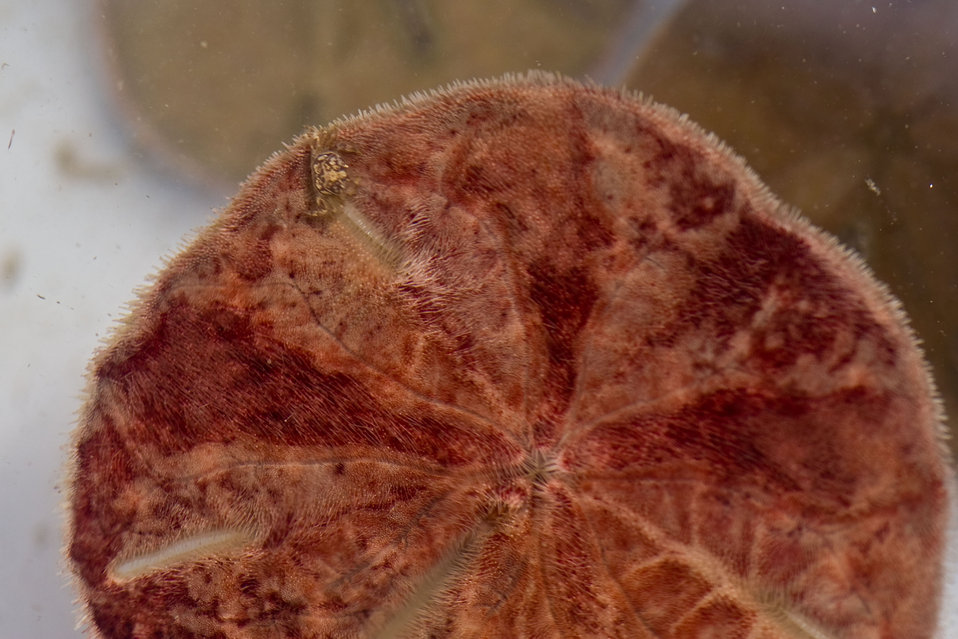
August 2010, Crabby sand dollar?